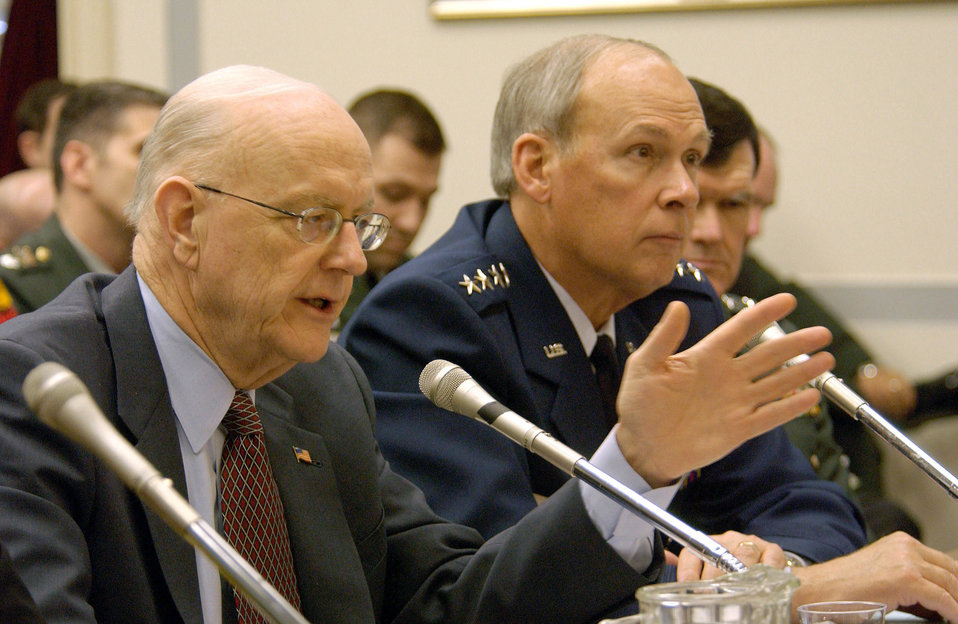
Teets tells lawmakers lasers-based communications on the way

WASHINGTON -- Peter B. Teets, acting secretary of the Air Force, and General Lance W. Lord, commander of Air Force Space Command, testify before members of the House Armed Services Committee subcommittee on strategic forces about the fiscal 2006 budget for space operations.